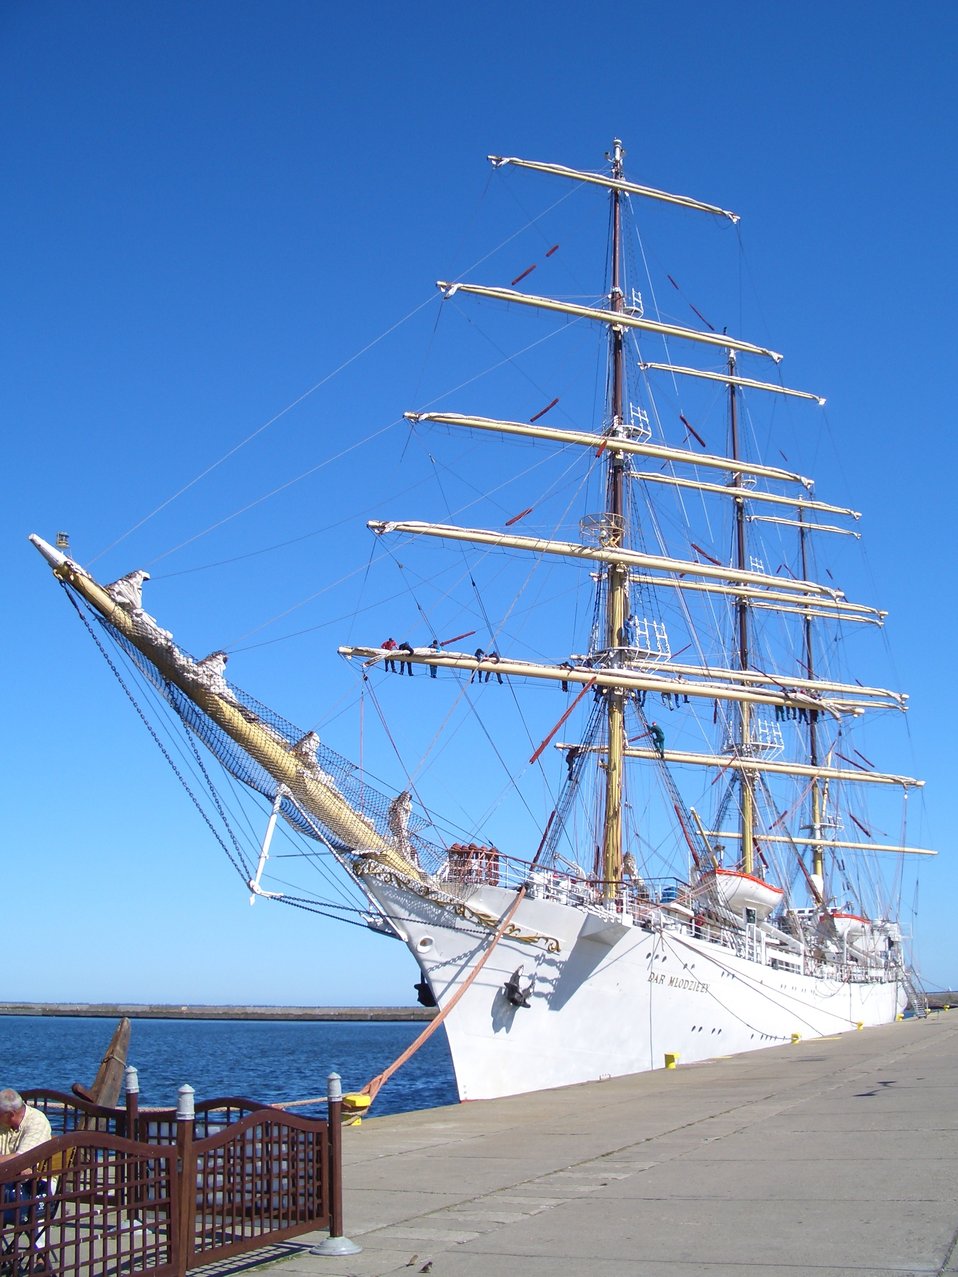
Dar mlodziezy2005